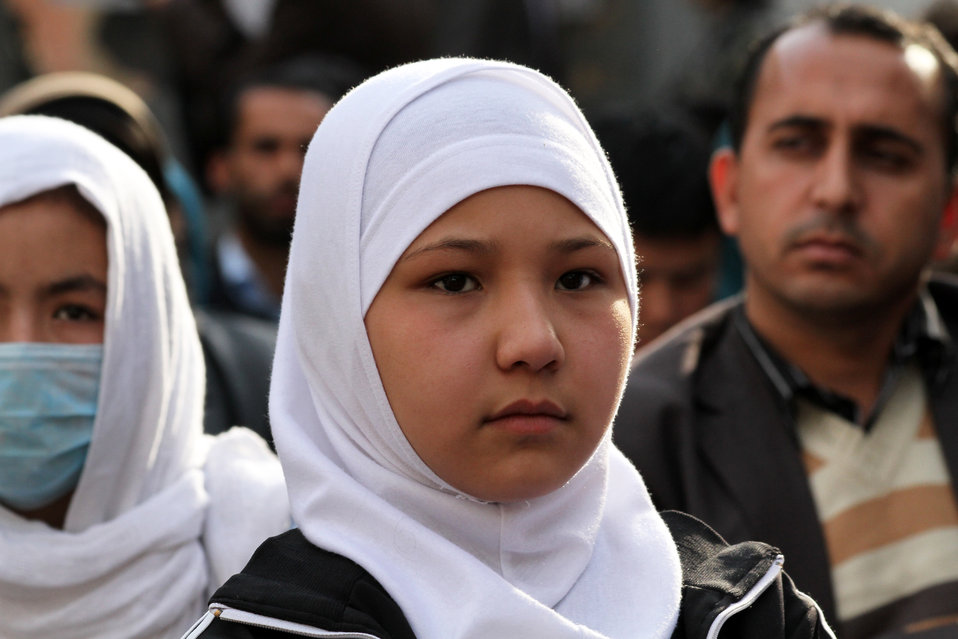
Afghan Youth Festival

Internews - USAID